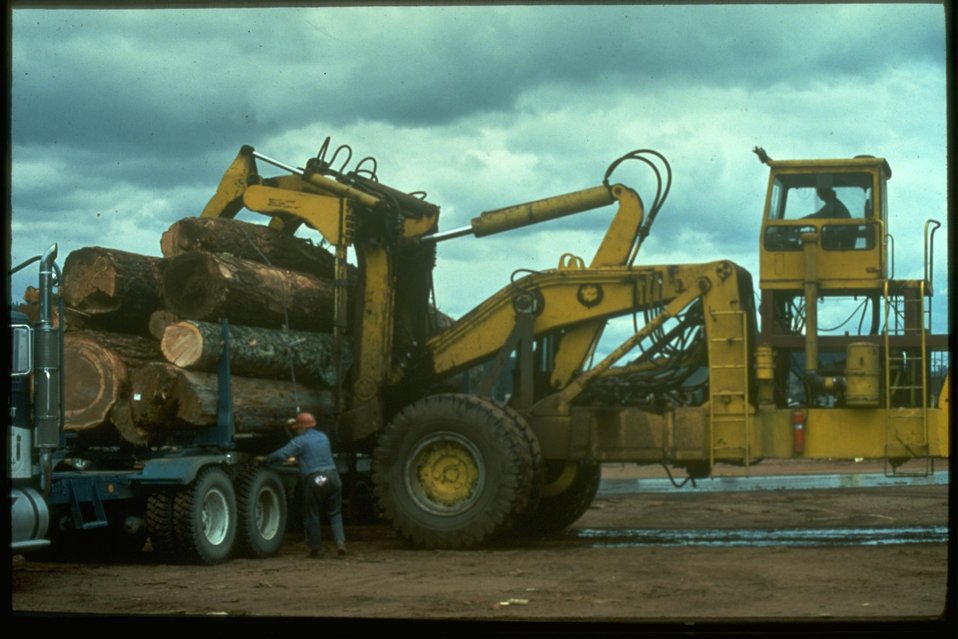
Unloading a log truck at the lumber mill.